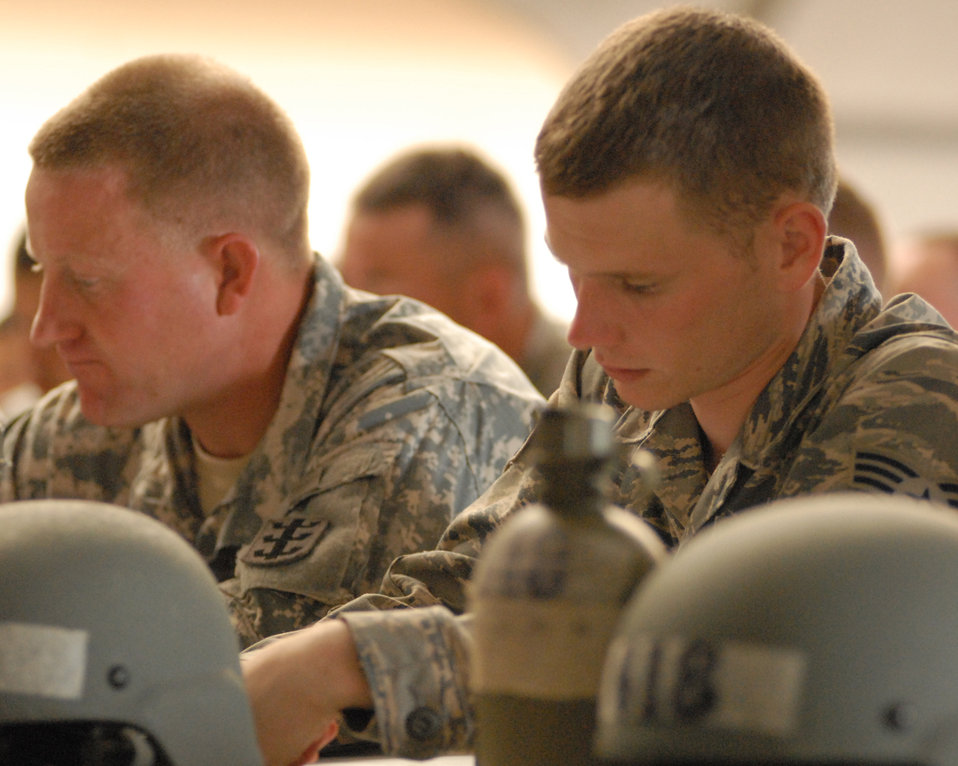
Airmen graduate Air Assault Course with Soldiers

Senior Airman Jordan Miller studies Air Assault Course curriculum with fellow Airmen and Soldiers May 10, 2011, in Wahiawa, Hawaii. He and four other 647th Security Forces Squadron Airmen were chosen to participate with 309 Soldiers in an 11-day Army Air Assault course April 30 to May 11, 2011.